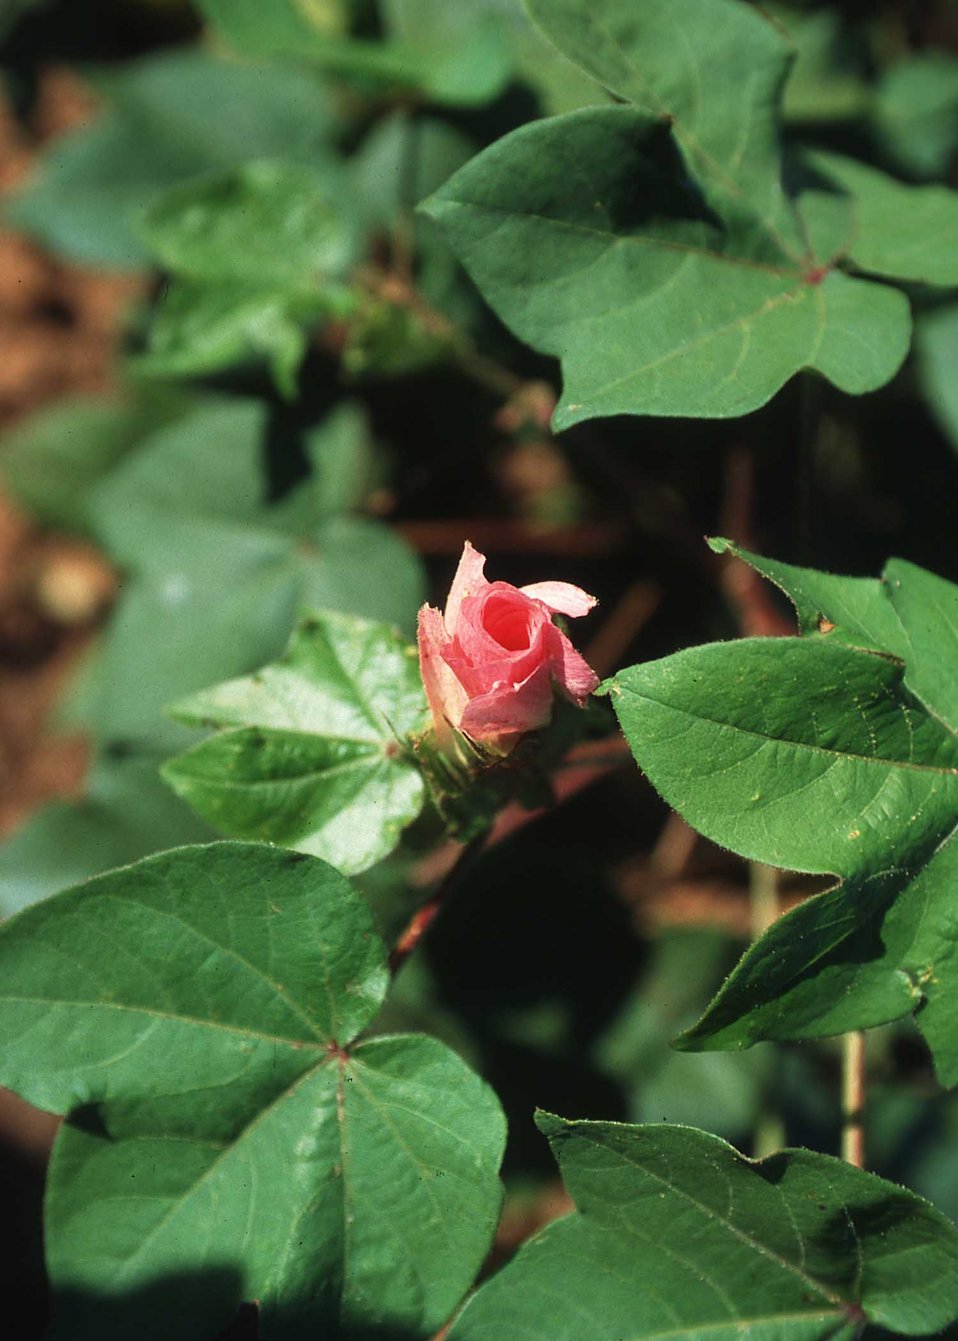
Cotton plant, Texas.